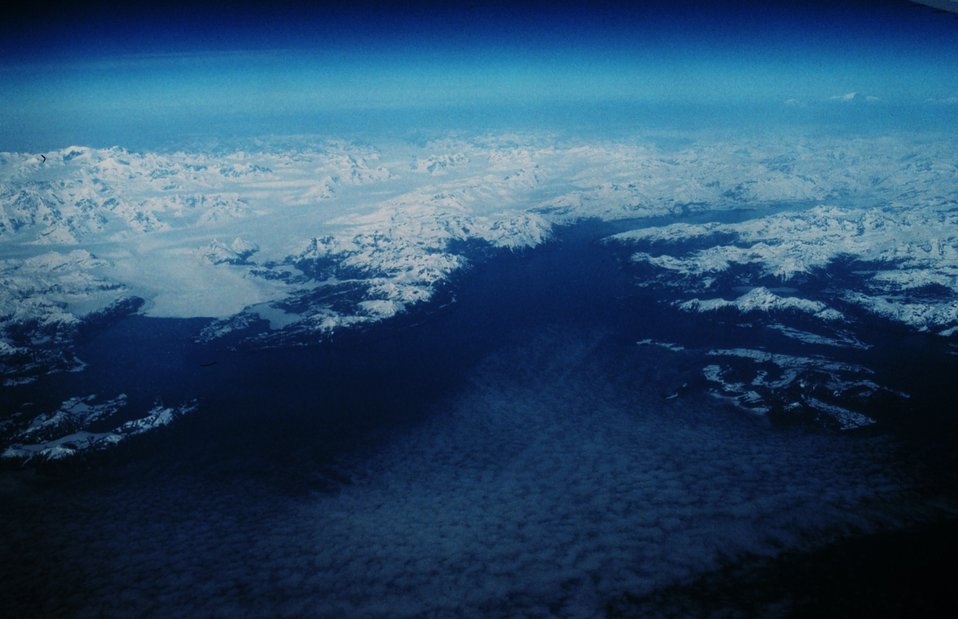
Prince William Sound - Valdez Arm in the right center, Columbia Glacier in left center. Glacier Island below Columbia Glacier.